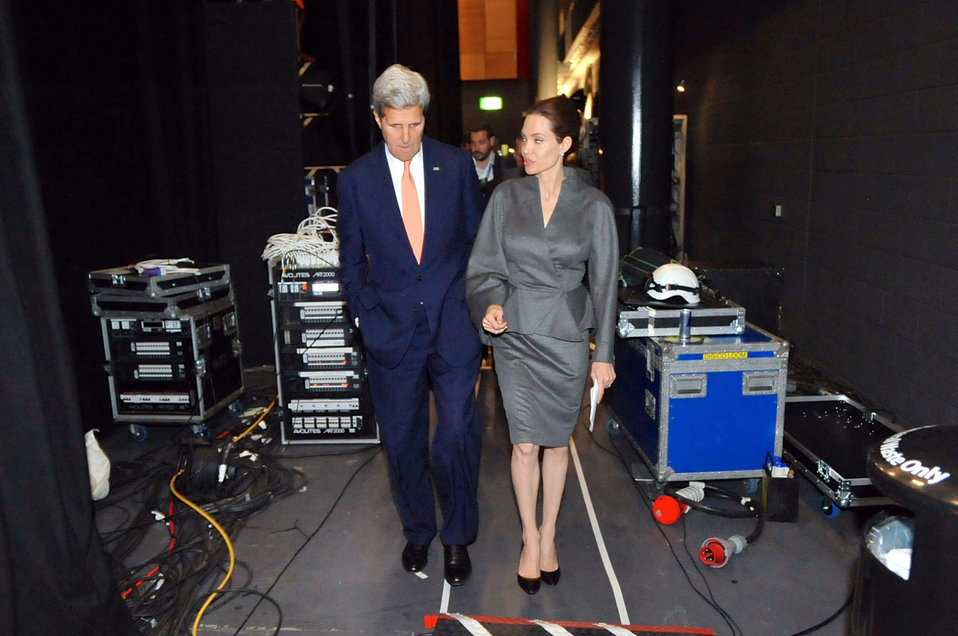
Secretary Kerry Chats With Actress Jolie Following Sexual Violence Summit in London

U.S. Secretary of State John Kerry walks backstage with actress and UN Envoy Angelina Jolie after addressing reporters at the conclusion of the 2014 Global Summit to End Sexual Violence in Conflict in London on June 13, 2014.